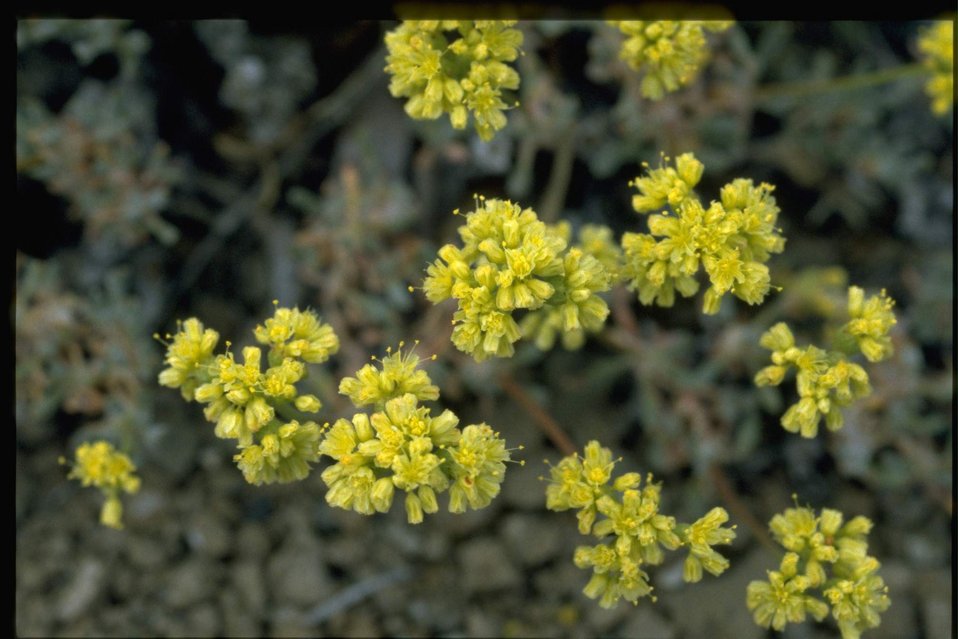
Medium shot of buckwheat wildflowers.